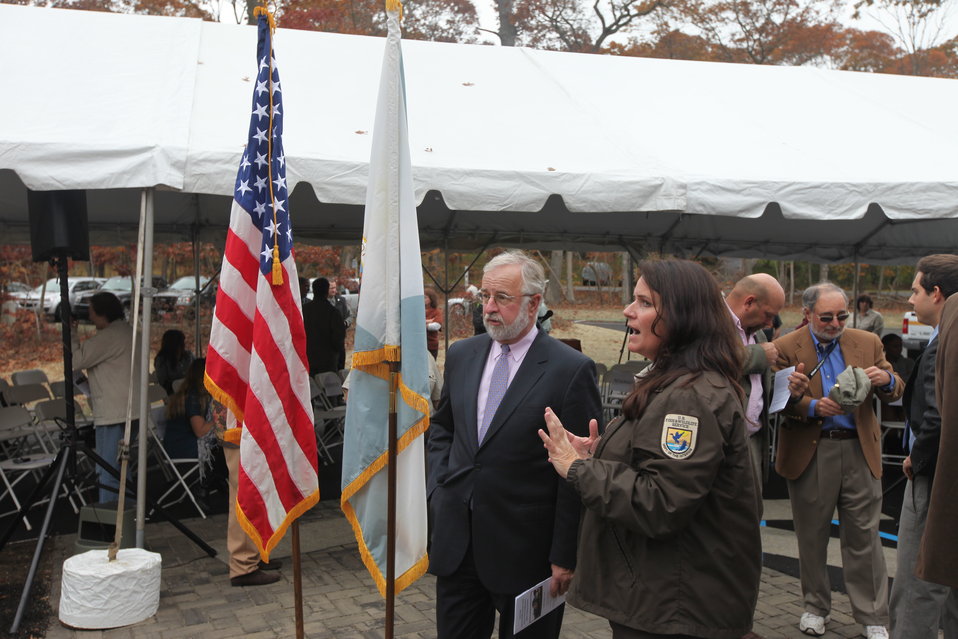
Congressman Timothy Bishop & Michelle Williams

Congressman Timothy Bishop, U.S. House of Representatives, First Congressional District greeted by Michelle Williams. Congressman Bishop spoke at the Ribbon Cutting Ceremony highlighting the econmomic benefits that such a Visitor center can bring to Long Island and the local community.